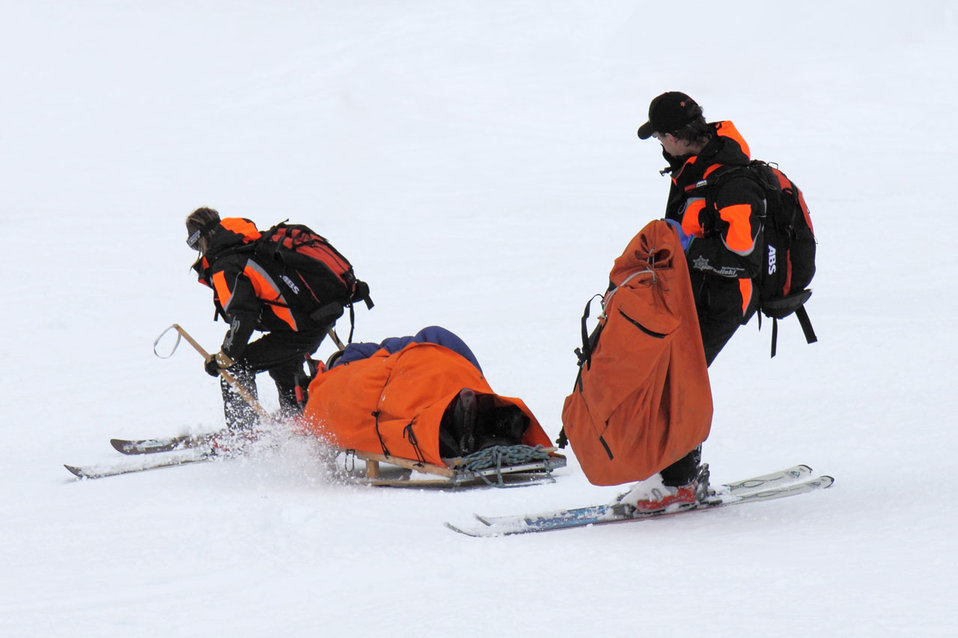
Ski rescue

Rescuers taking an injured man to safety.